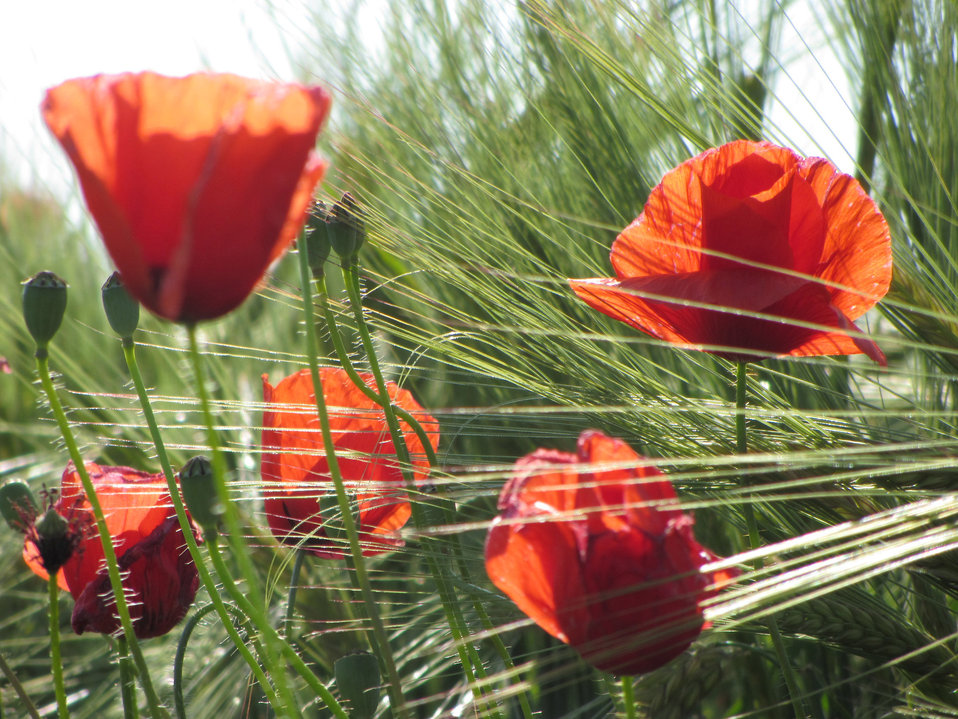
Poppies and wheat composition

An awesome fantasy ears of wheat and red poppies..